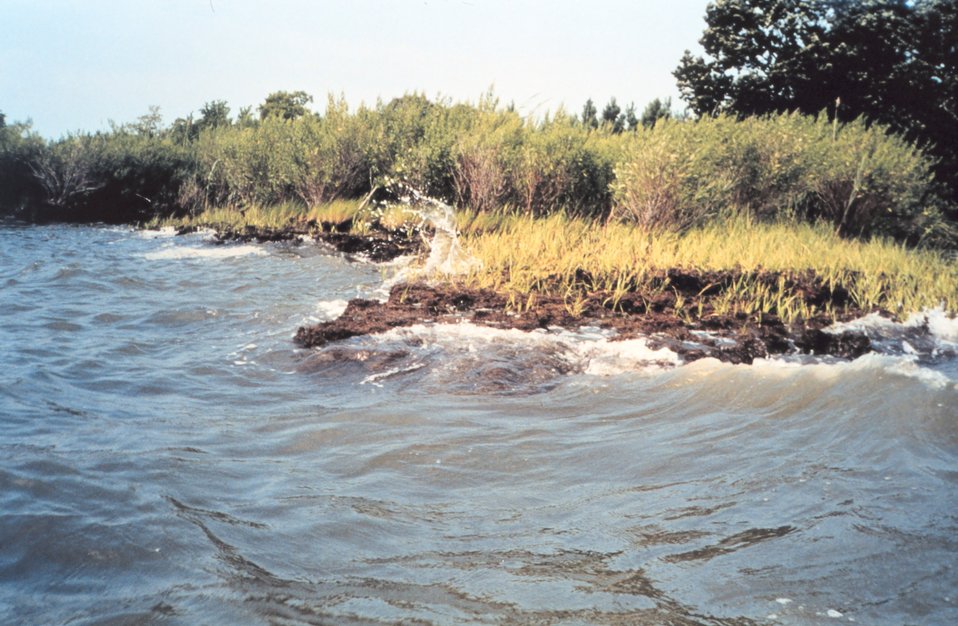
Like most areas in Chesapeake Bay, Wye Island suffers from the scourge of erosion as waves beat against the shoreline.